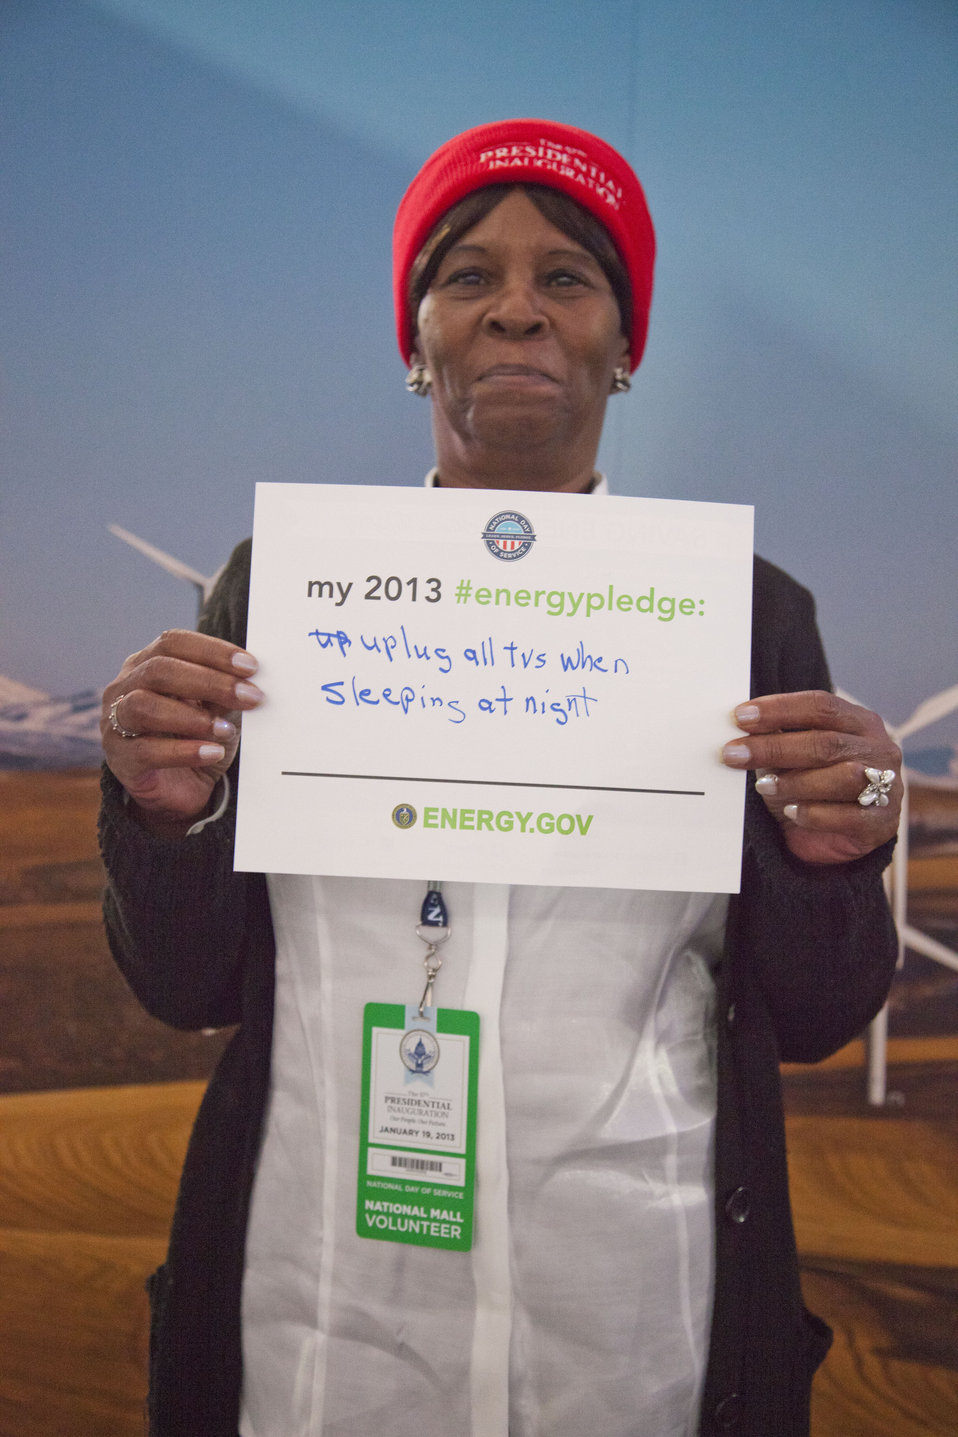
What's your #energypledge?